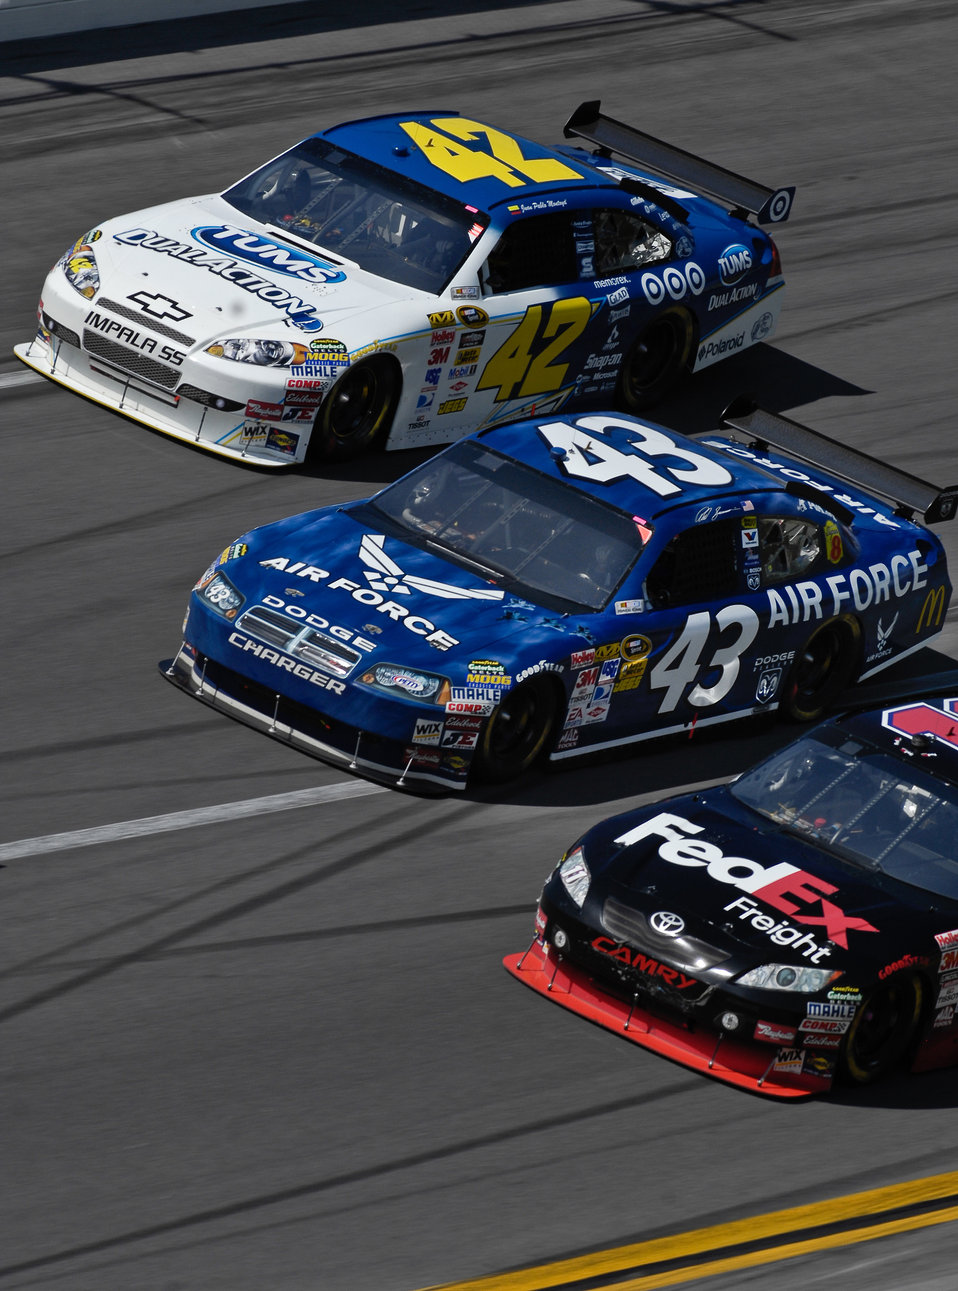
Air Force at Talladega

The #43 Air Force-sponsored NASCAR driven by Reed Sorenson makes its way to the front during the Aaron's 499 race April 26 at Talladega Superspeedway in Talladega, Ala. This was the first race for the #43 Richard Petty Motor Sports car featuring the Air Force primary paint scheme. The car started 41st but finished 11th in the race.